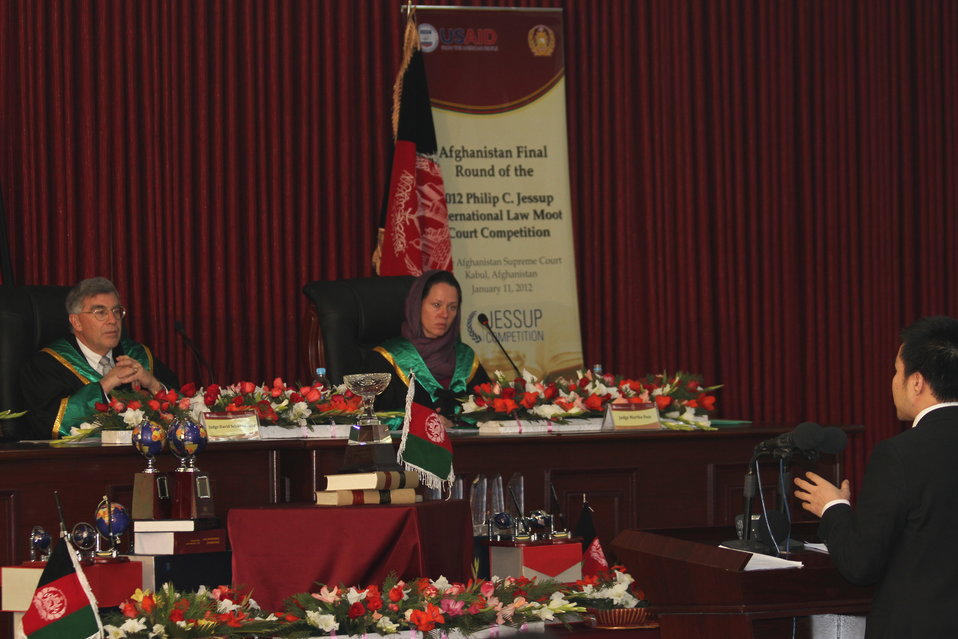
Opening Arguements

Balkh Student opens his case at Jessup Moot court , January 11, 2012